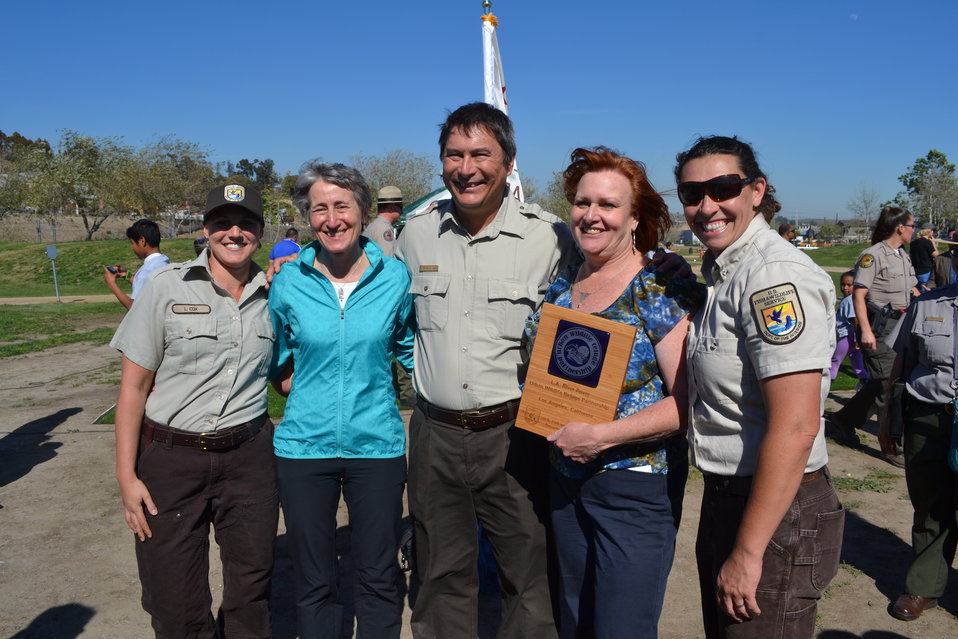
SOI Sally Jewell Visit to LA

From left: Public Information Specialist for the SDNWR Complex Lisa Cox, Secretary Sally Jewell, Project Leader for the SDNWR Complex Andy Yuen, Director of Education Programs for the Friends of the Los Angeles River Shelly Backlar, and Environmental Education Specialist for the SDNWR Complex Chantel Jimenez.
(Anne Dove, NPS for the USFWS)